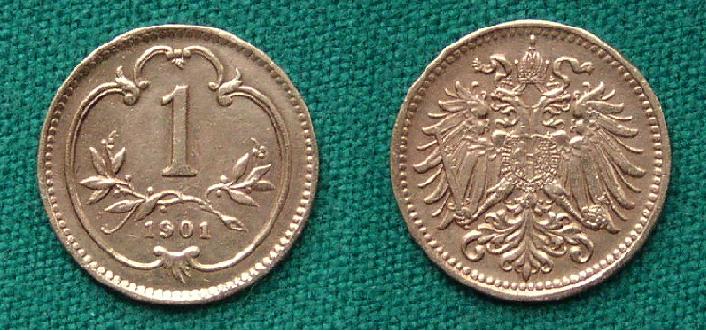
Čeština: 1 heller 1901